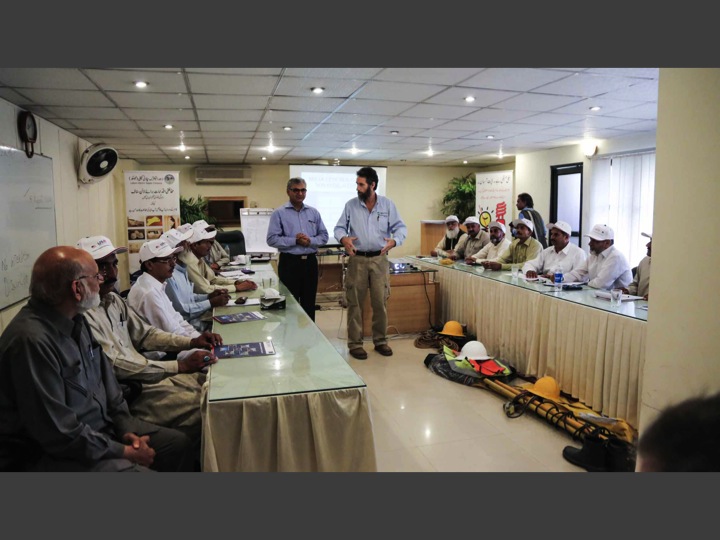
Training Session